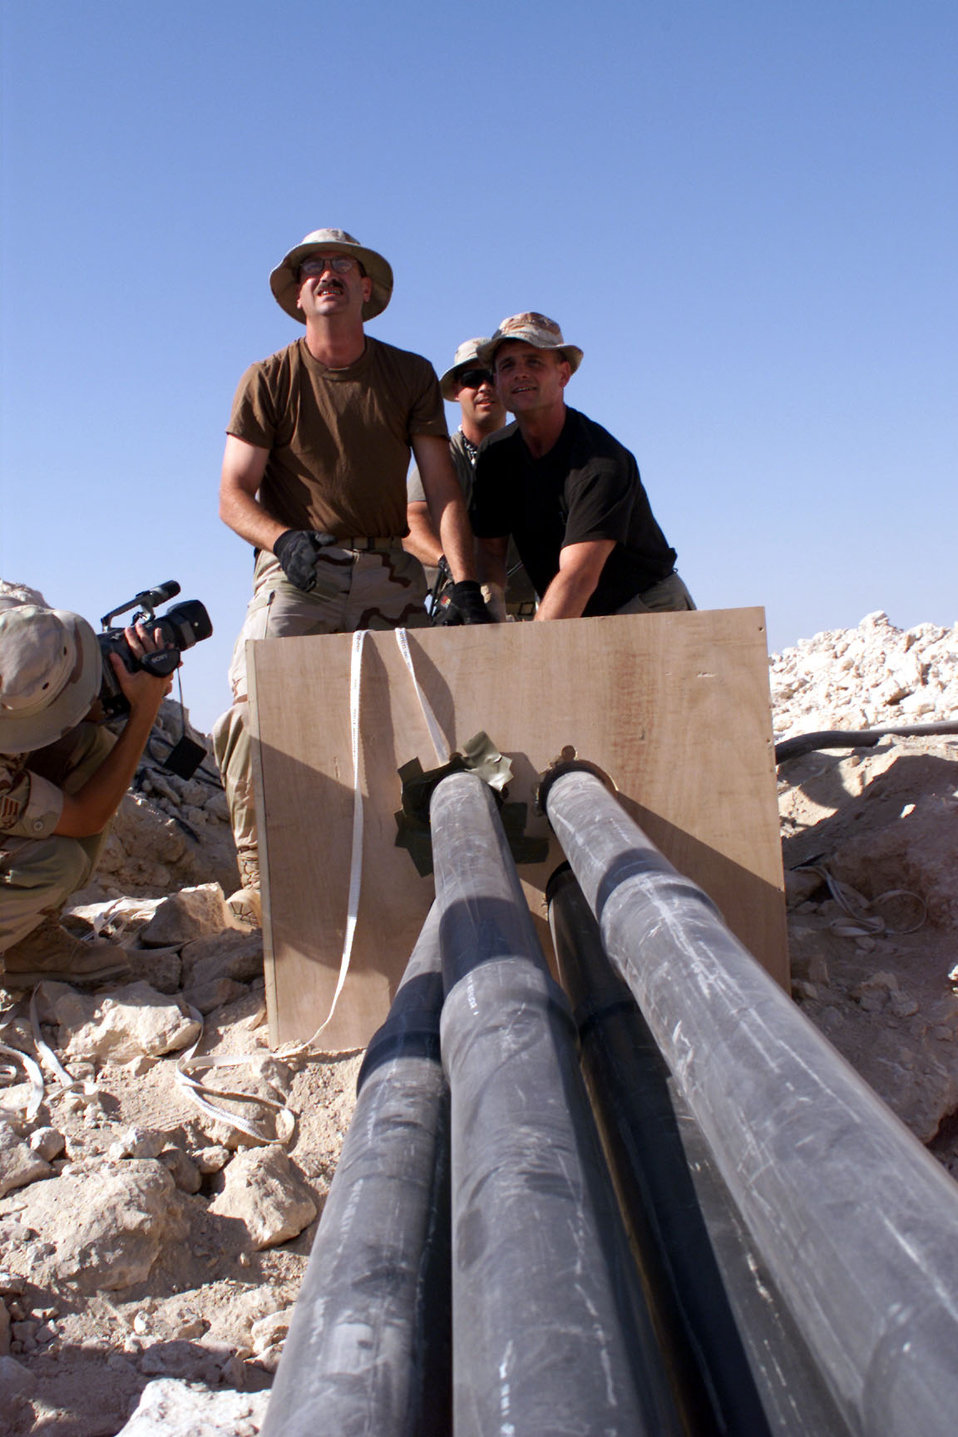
Cable guys

OPERATION ENDURING FREEDOM -- Senior Airman Angelita Boerm (kneeling) shoots video footage of Chief Master Sgt. Terry Arnold (left), Master Sgt. Chuck Anderson (middle) and Staff Sgt. Jason Wolfe as they pull cable through a system of pipelines Nov. 4. All four people are deployed to the 366th Communications Squadron in support of Operation Enduring Freedom.